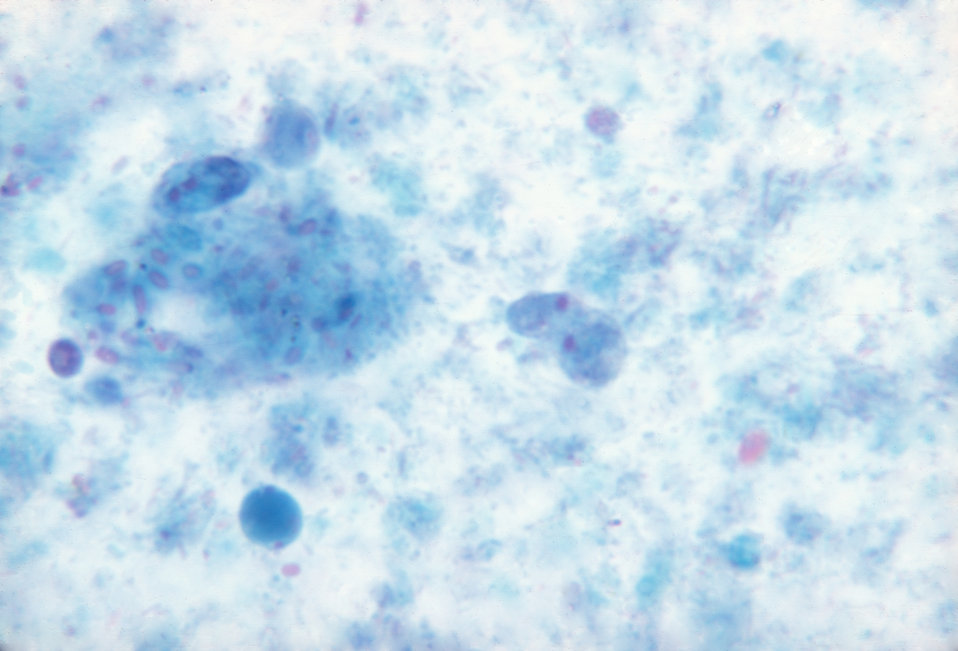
Dientamoeba fragilis. Trichrome stain. Parasite, ameba.